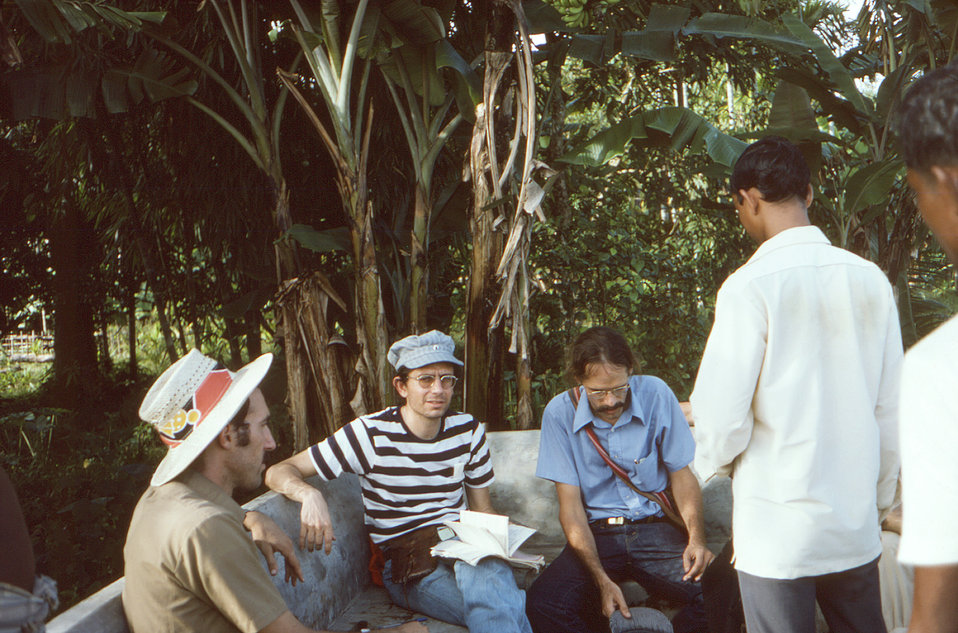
Depicted in this September, 1975 image, wearing a blue shirt, was Dr. Stephen Jones, who was in the process of teaching eradication team participants Alan H. Schnur (far left), and Dr. Michael Schwartz, in a striped cap, the pertinent epidemiologic information, during a 3-day training trip to the Sylet District in north-eastern Bangladesh.